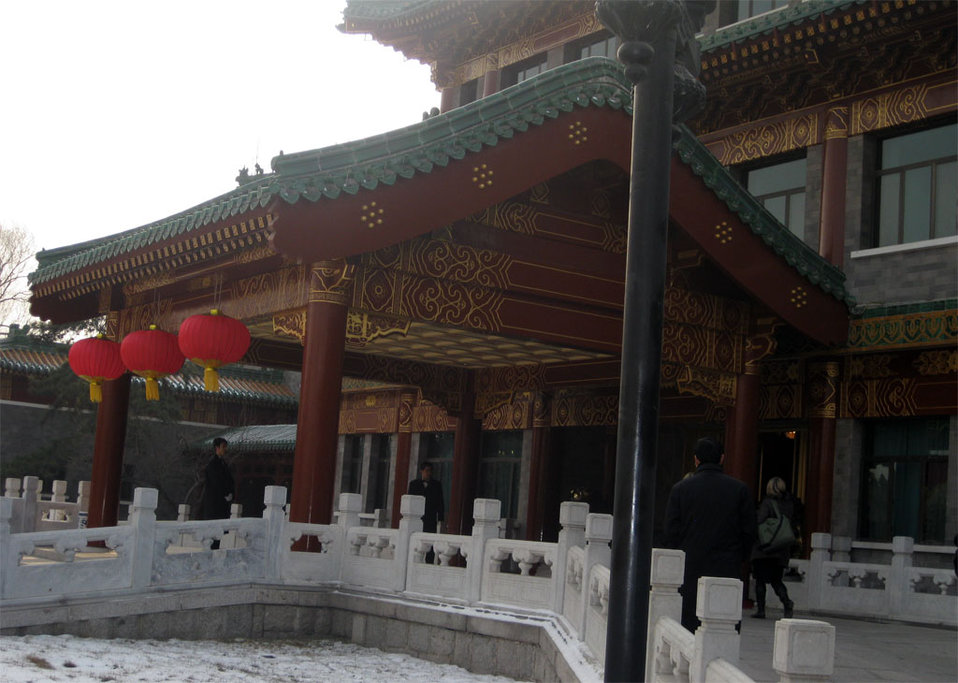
Diaoyutai State Guesthouse Entrance

Behind the Scenes: The front entrance at the Diaoyutai State Guesthouse in Beijing, China February 20, 2009.